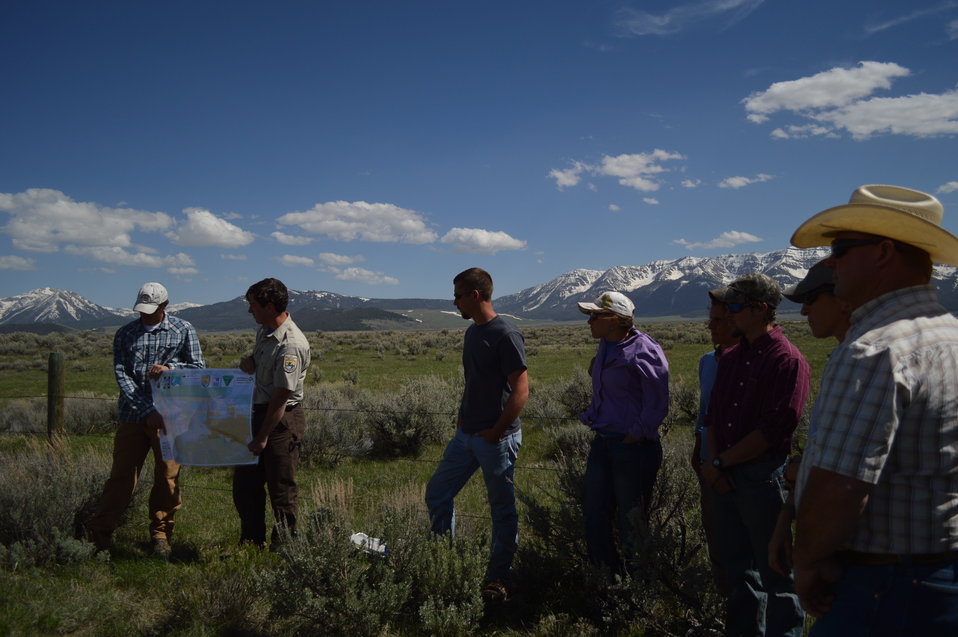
Regional Leadership Visit to Montana 2014